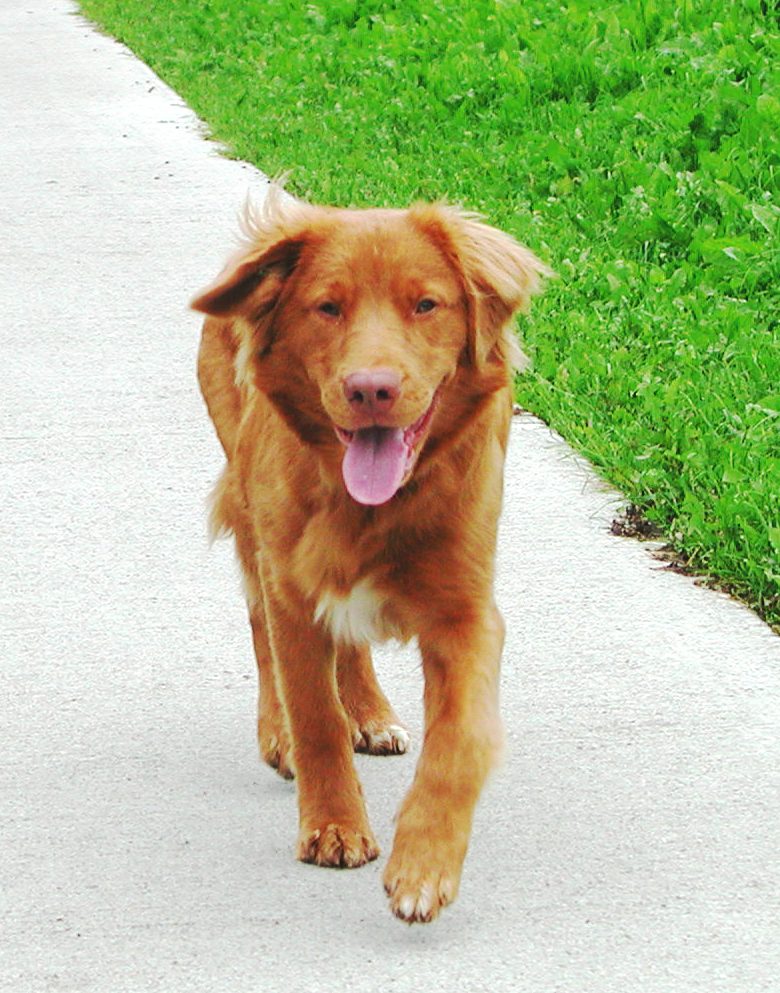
Nederlands: Paddle-c